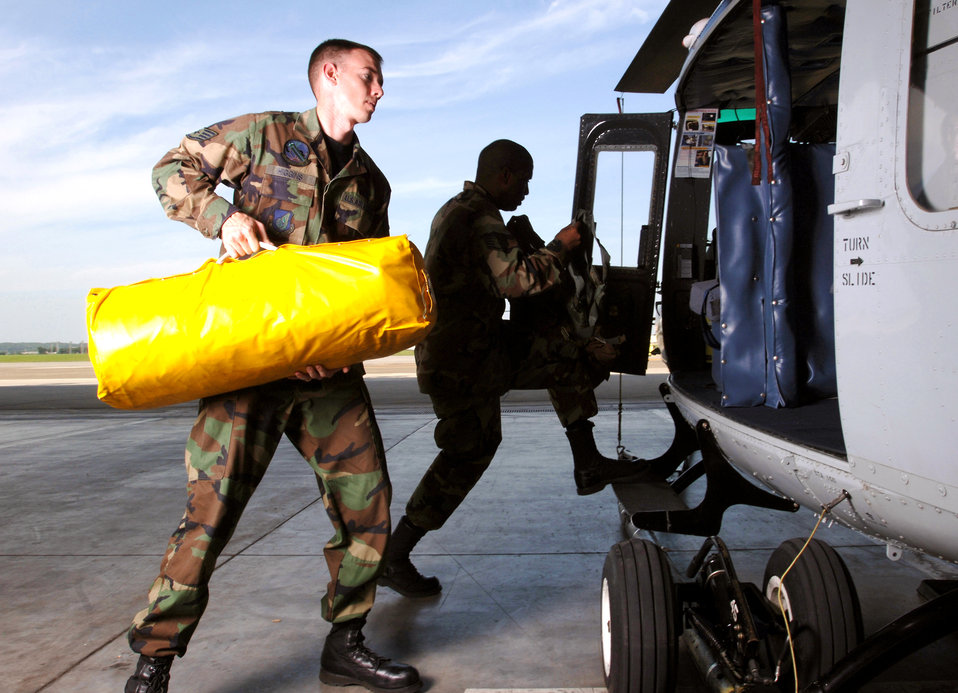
Pacific life support

YOKOTA AIR BASE, Japan -- Staff Sgts. Brian Higgins (foreground) and Raymond Norris load survival equipment inside a UH-1N Huey helicopter before an overwater mission. The two aircrew life-support technicians, both assigned to the 459th Airlift Squadron here, provide life rafts, life preservers, survival vests, survival kits and emergency breathing system equipment for aircrews.